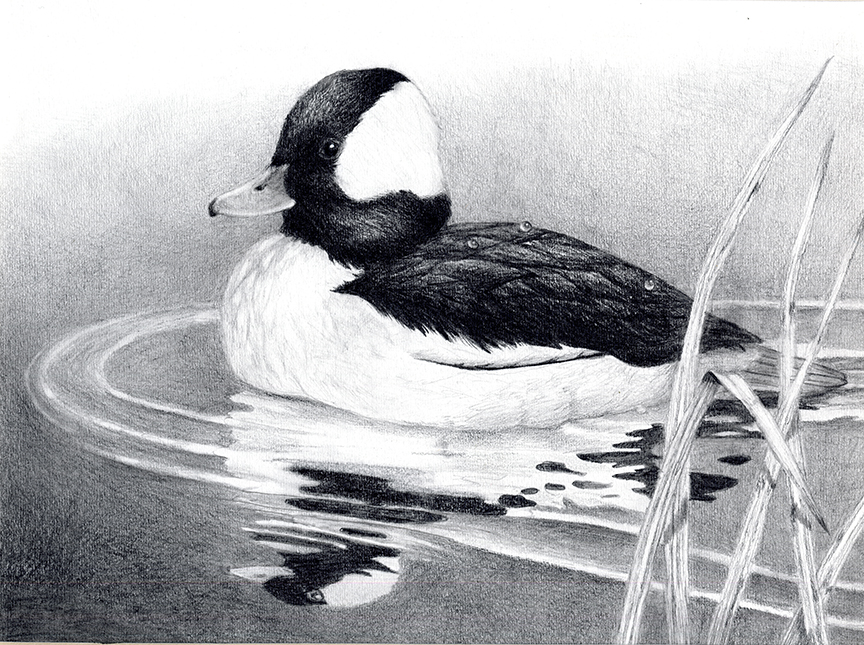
JRDuck2013CT

2013 Junior Duck Stamp Best of Show-Connecticut